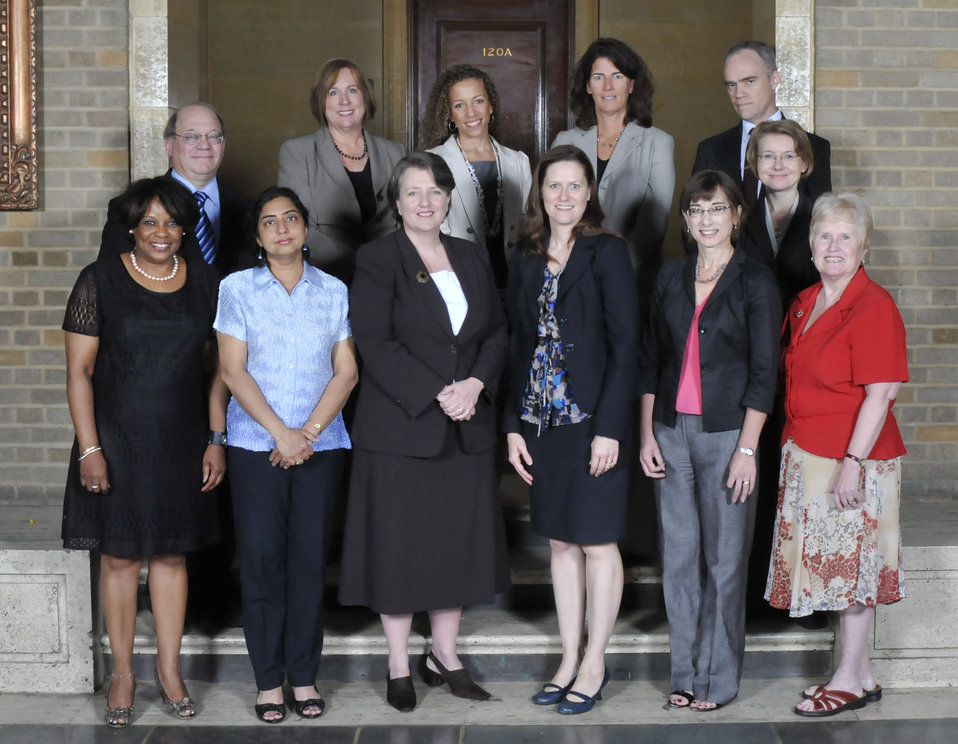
Healthy, Hunger Free Kids Act Working Group
Food and Nutrition Service, Alexandria, VA
Ronald Vogel, Group Leader
For sustained and outstanding efforts supporting the reauthorization of the Child Nutrition and WIC Programs, resulting in the enactment of the Healthy, Hunger-Free Kids Act of 2010.
On September 14, 2011 in the patio of the Whitten Building Patio of the US Department of Agriculture in Washington, DC.